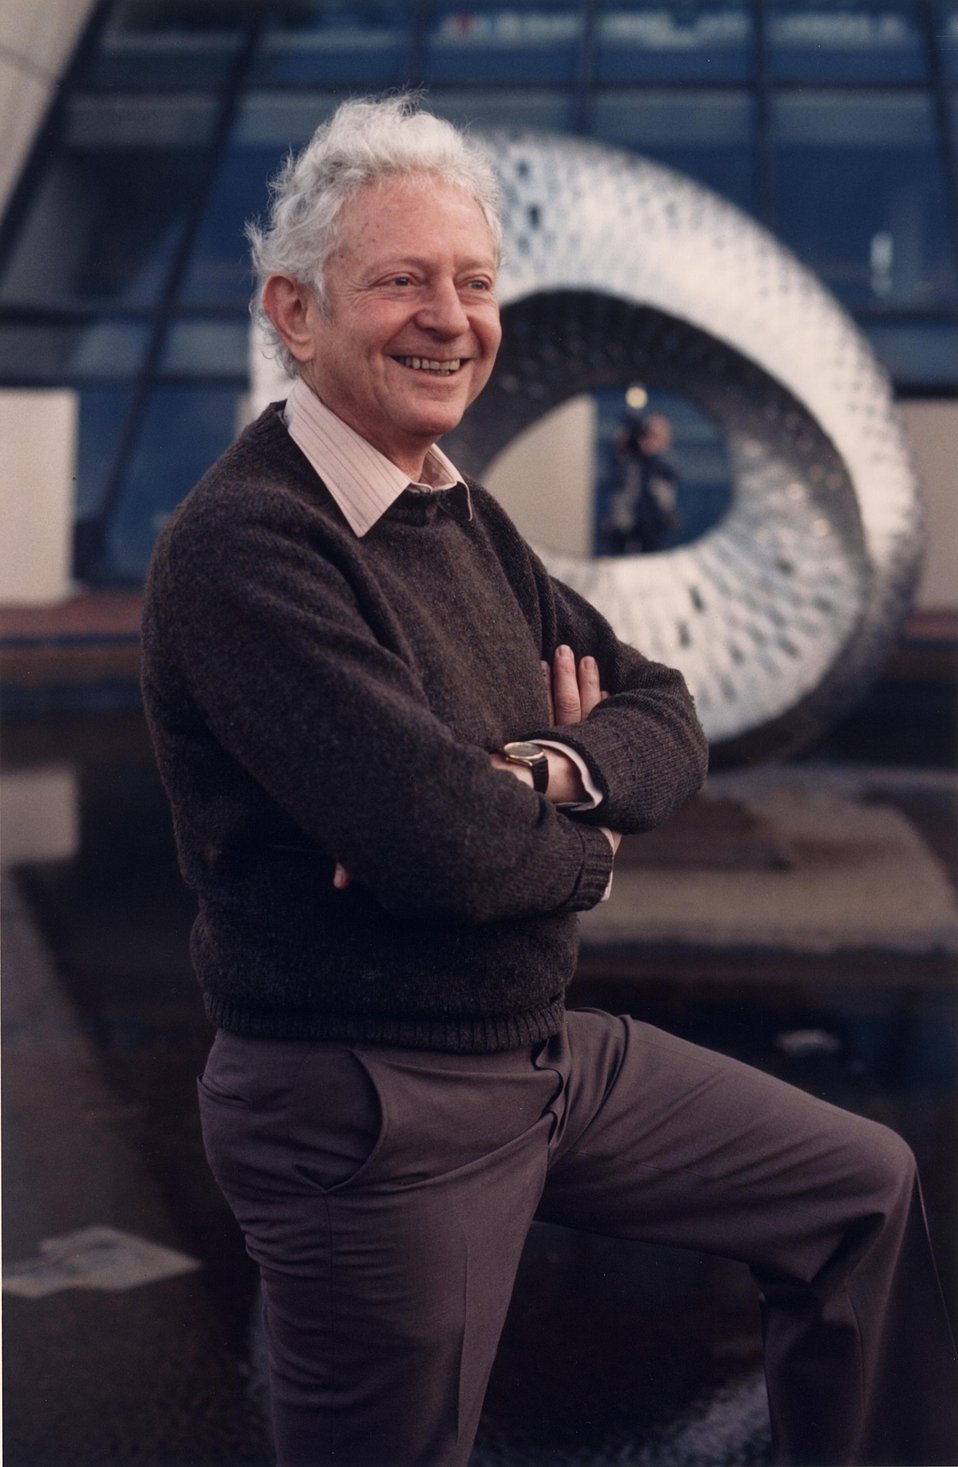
Nobel Prize for Physics, 1988. Dr. Leon M. Lederman, Director Emeritus at Fermi National Accelerator Laboratory, Batavia, Il.